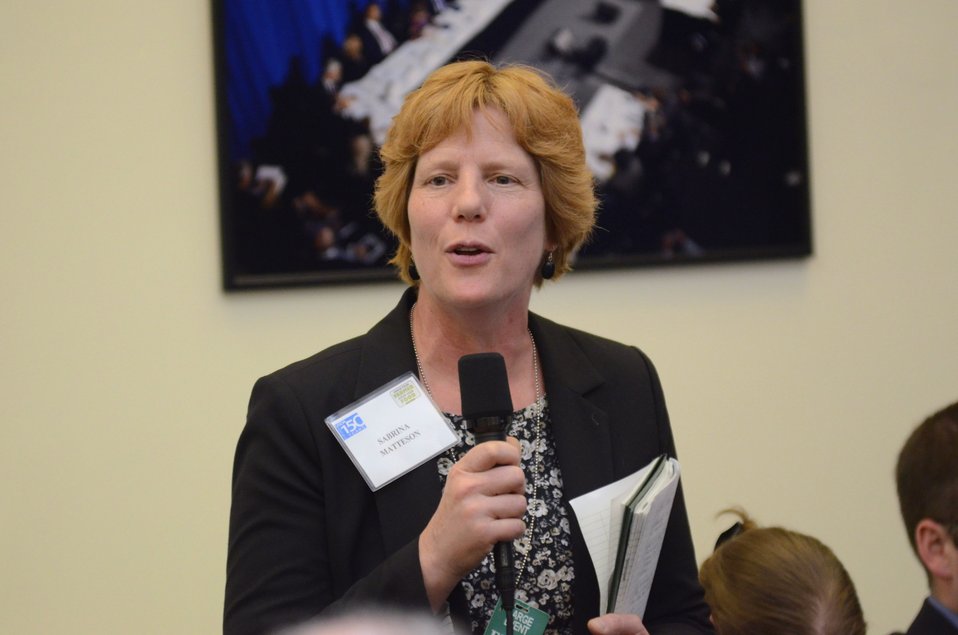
Sabrina Matteson, Director , Rural Affairs, American Farm Bureau. Sabrina has had a long history with new and beginning farmers with the American Farm Bureau. She was also a key part of the USDA’s partnership with American Farm Bureau to develop the recently announced Start2Farm.gov resource website. Sabrina is originally a farmer and 4H parent from New Hampshire. Ms Matteson made remarks at the continuation of the National Conversation on Local and Regional Food projects and how they offer economic opportunities to local farmers, ranchers and food entrepreneurs. The virtual conversation took place from the White House, and Twitter was used to expand the conversation worldwide, from Washington, D.C., on Monday, March 5, 2012. Unlike most events where mobile communication devices are asked to be turned off, here it was asked that they remain on allowing people to have social media conversations. USDA Photo by Lance Cheung. Foundation is also a major foundation supporter of food hubs.